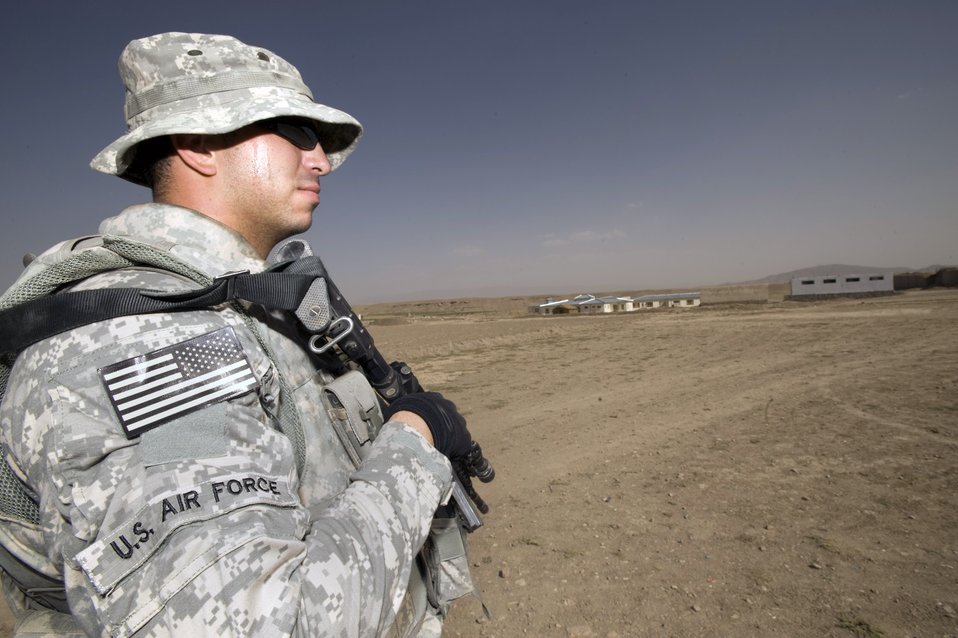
Servicemembers strive to brighten future for Afghan youths

Staff Sgt. Joe Montano provides security while other members of the Zabul Provincial Reconstruction Team survey construction progress made at a boys school Aug. 10 at Qalat, Afghanistan. Sergeant Montano, who is an F-15 Eagle crew chief at Nellis Air Force Base, Nev., is a mine resistant ambush protected vehicle driver and provides security for the team during his deployment here.